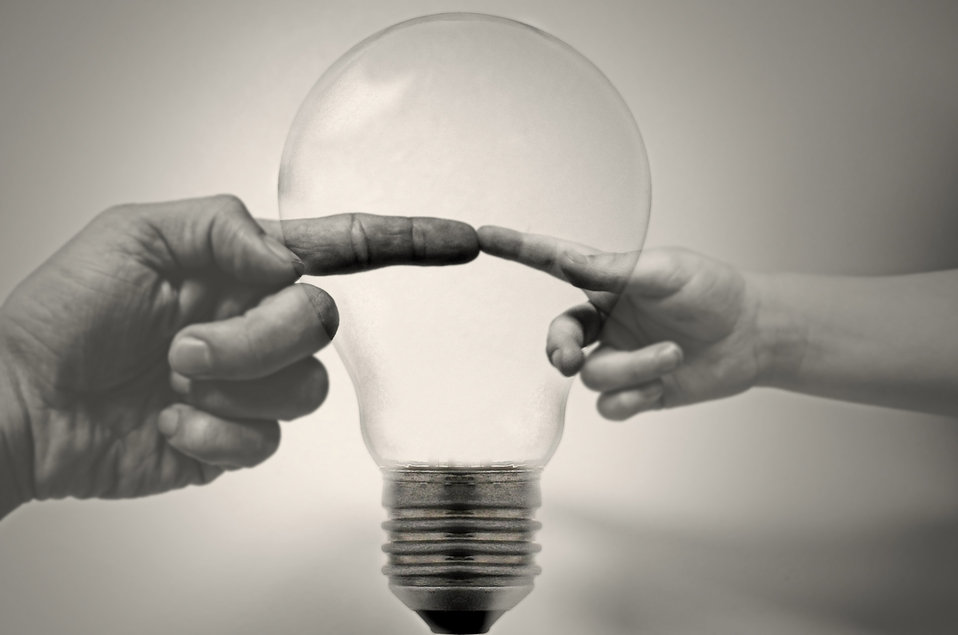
Home energy.